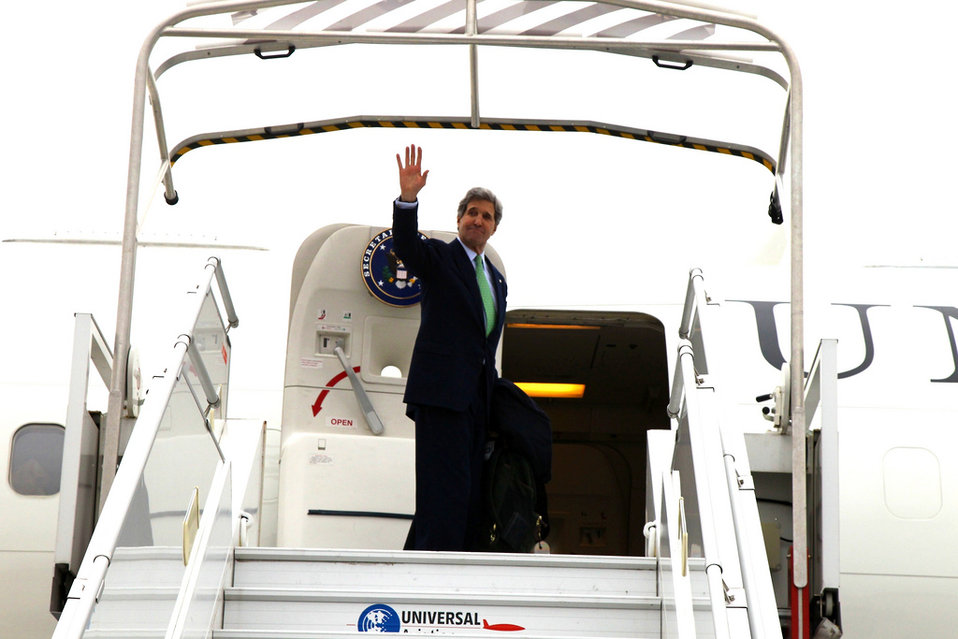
Secretary Kerry Departs Paris

U.S. Secretary of State John Kerry waves goodbye to Paris, France, February 27, 2013.